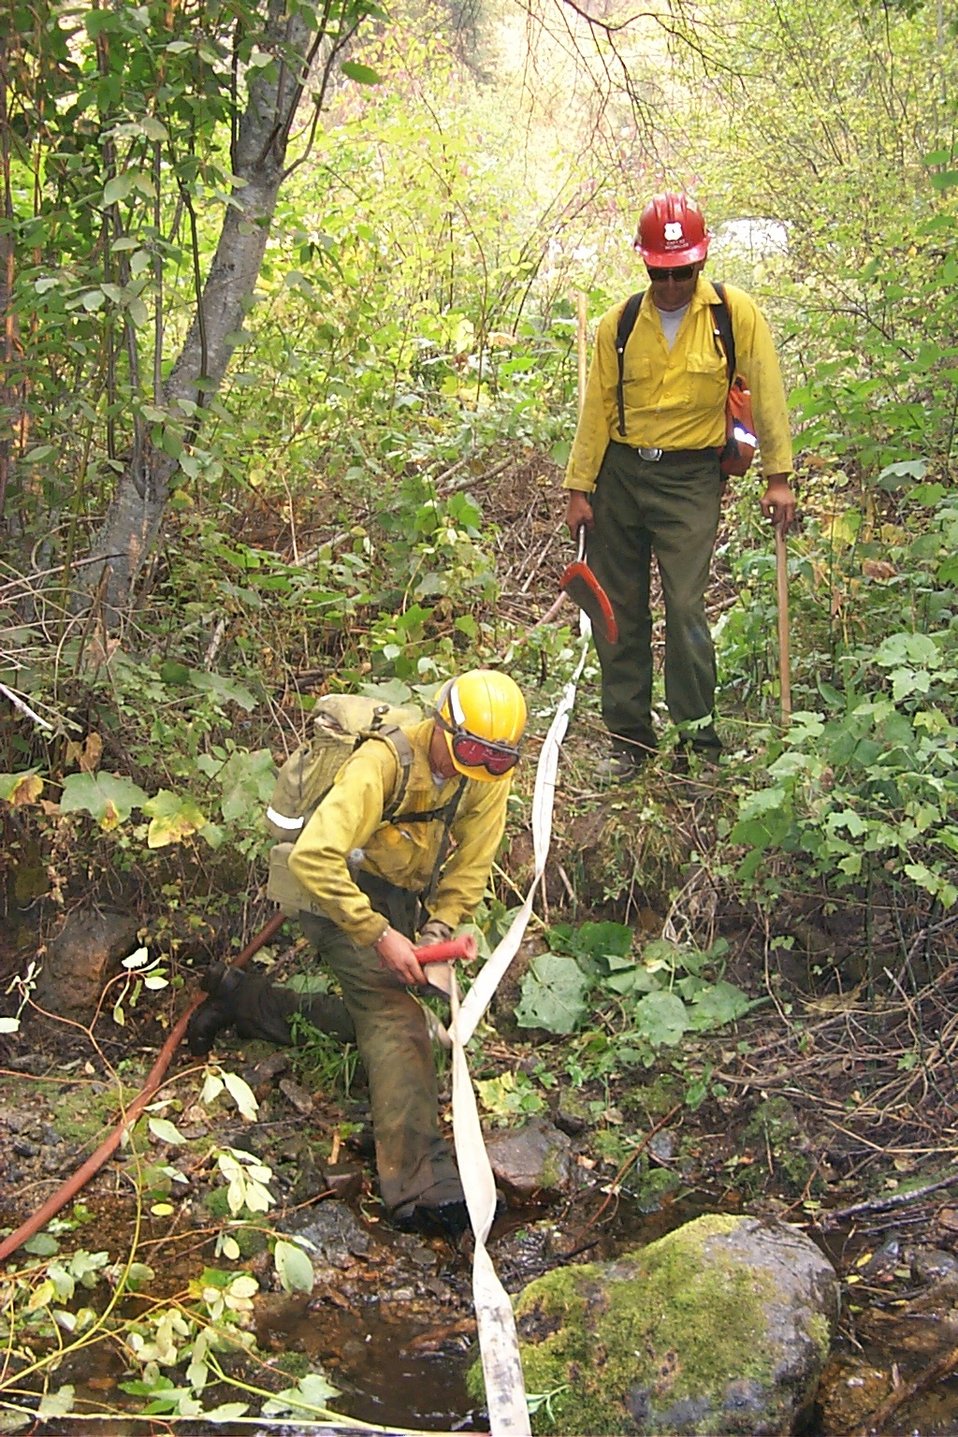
Line crew Fire Clearwater Fire Salmon Field Office USRD Upper Snake River District